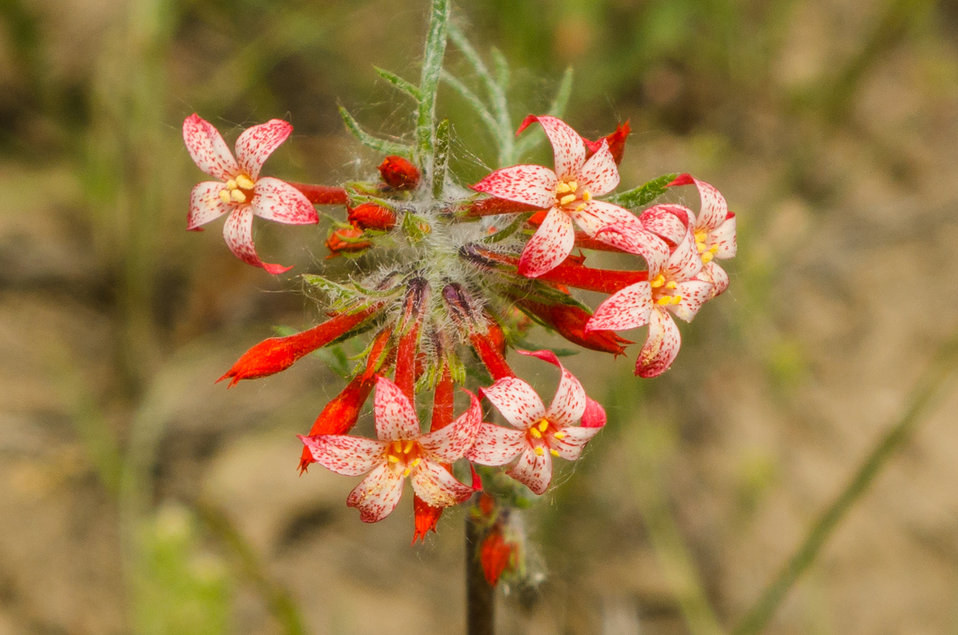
A Red Beauty

Scarlet Gilia has brilliant flowers that attract hummingbirds.

Credit: USFWS / Barbara Hayton, National Elk Refuge volunteer